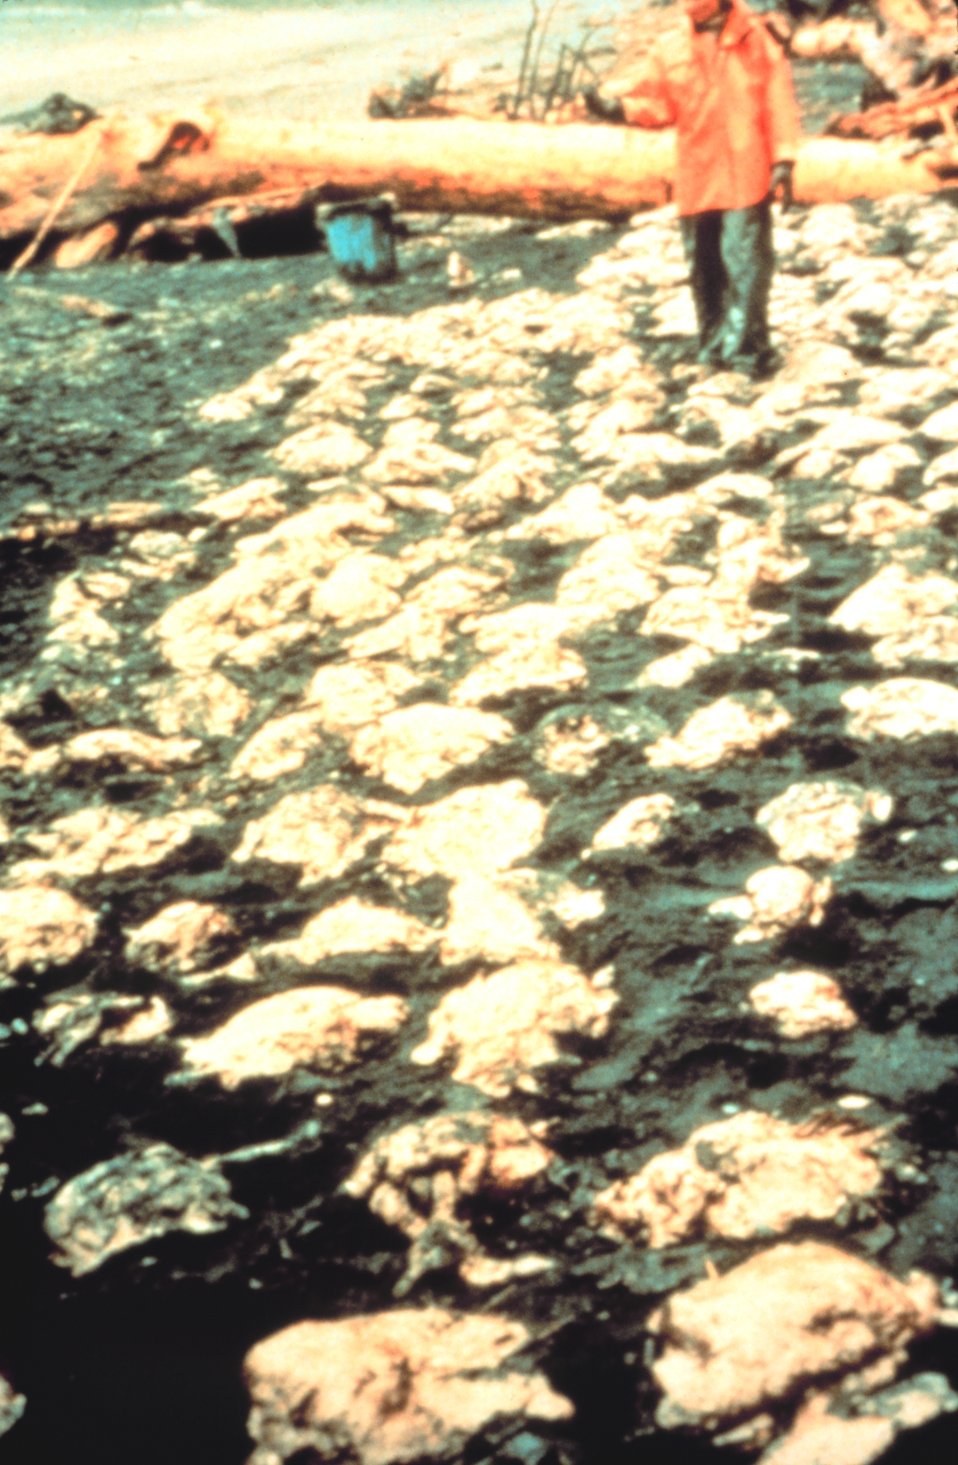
Oiled dead birds.